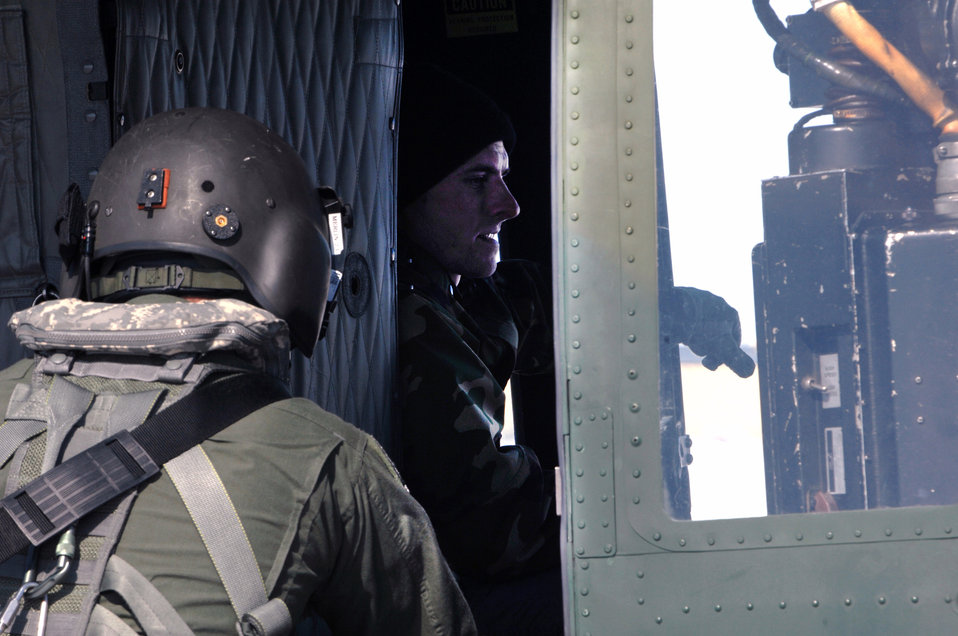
Minot Airmen continue North Dakota flood support

A UH-1N Huey helicopter returned to Minot Air Force Base, N.D., March 27 for a crew swap before heading to Grand Forks AFB, N.D., to assist in flood relief efforts in the Fargo area of North Dakota. Two hoist-equipped UH-1Ns from the 91st Missile Wing from Minot AFB are part of an interagency task force providing search and rescue and support services in flood-affected areas of North Dakota.